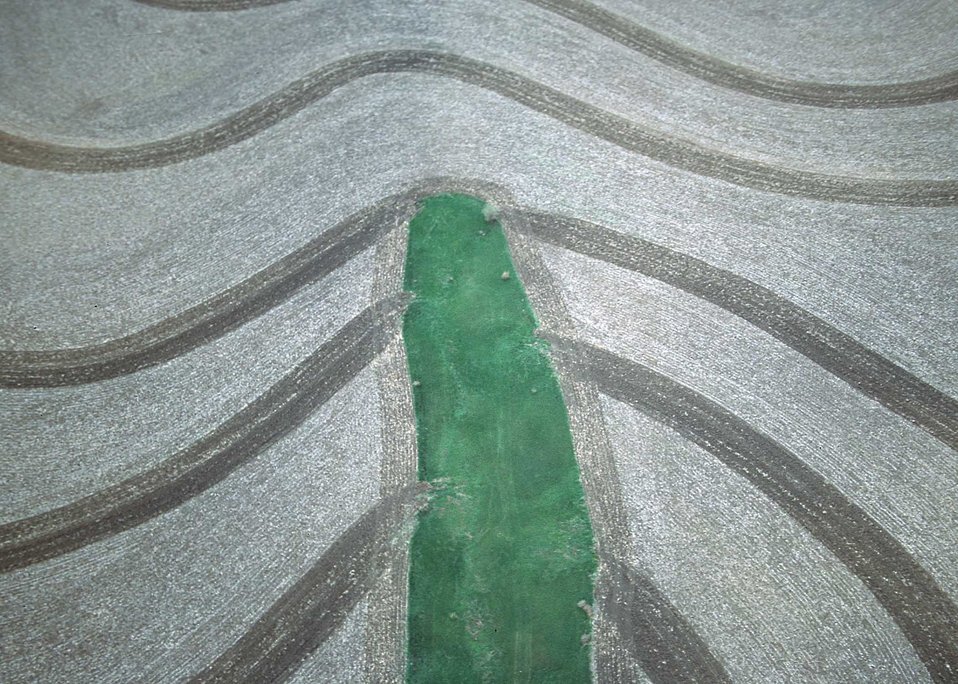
Aerial view on contour terraces and grassed waterways for erosion control. Kansas.